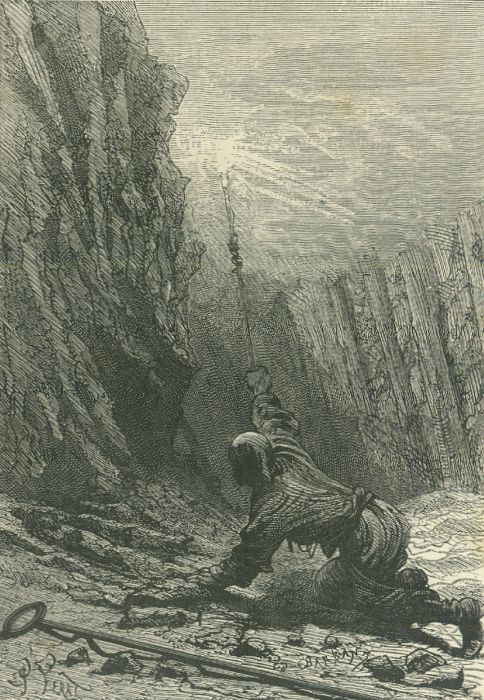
An illustration from the novel 'The Child of the Cavern' (alternative English titles for this novel include: Black Diamonds, Black Indies, Child of the Cavern, or Strange Doings Underground and The Underground City) by Jules Verne drawn by Jules Férat. Polski: Ilustracja powieści Juliusza Verne'a 'Czarne Indie' autorstwa Julesa Férata. Français : 'Les Indes noires', Jules Férat. Orginal description from the book: Français : Le pénitent, la face masquée, allait en rampant sur le sol.